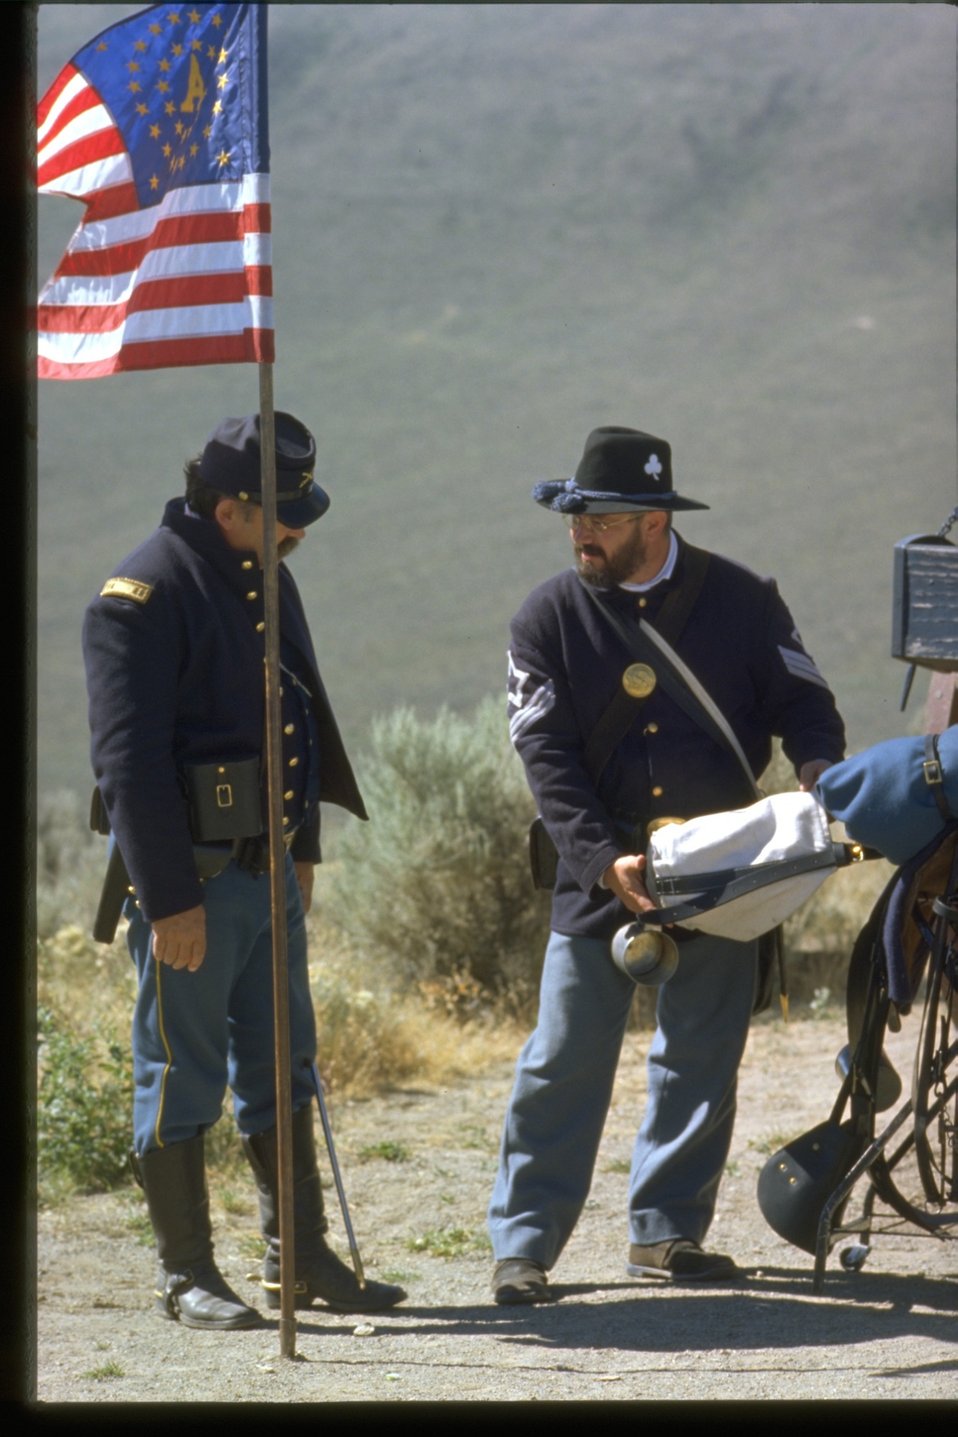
Soldiers and play in the Pioneer festival scene at the NHOTIC.